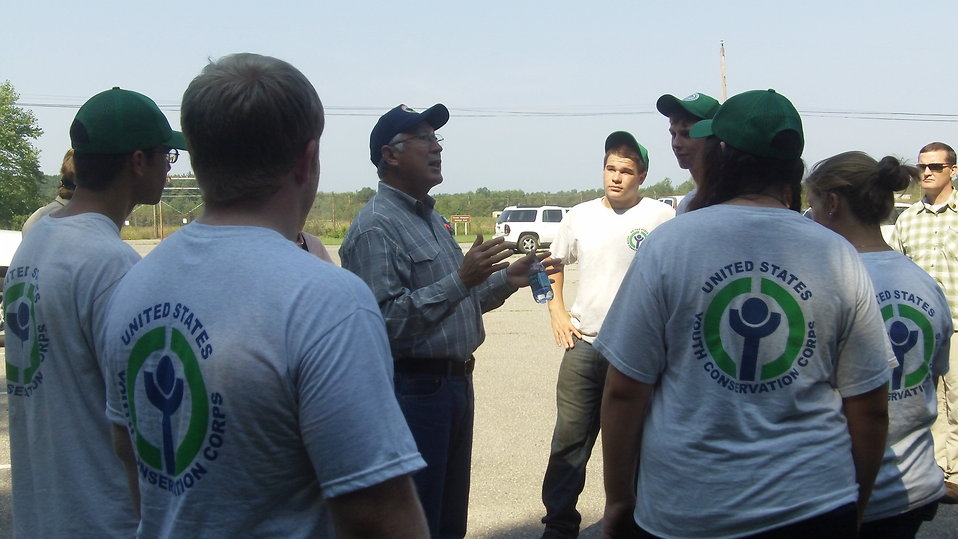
Secretary Salazar visit to Great Bay

Secretary of the Interior Ken Salazar talks with members of the Youth Conservation Corps. Visit occurred on August 19, 2011.